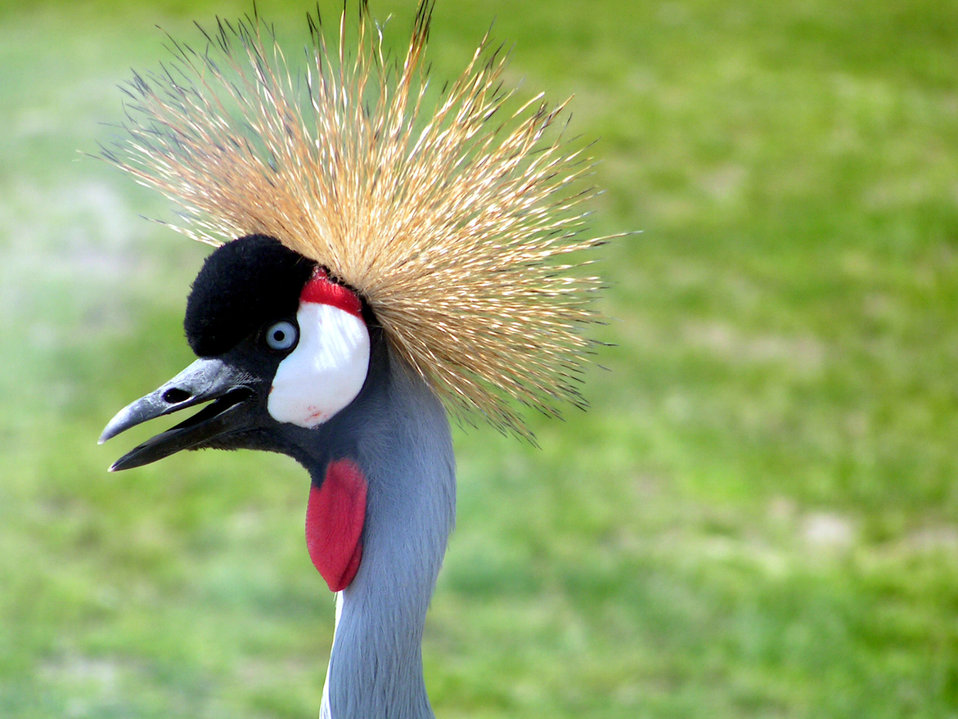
Spiky hair crane

Bird with spiky hair on his crown.